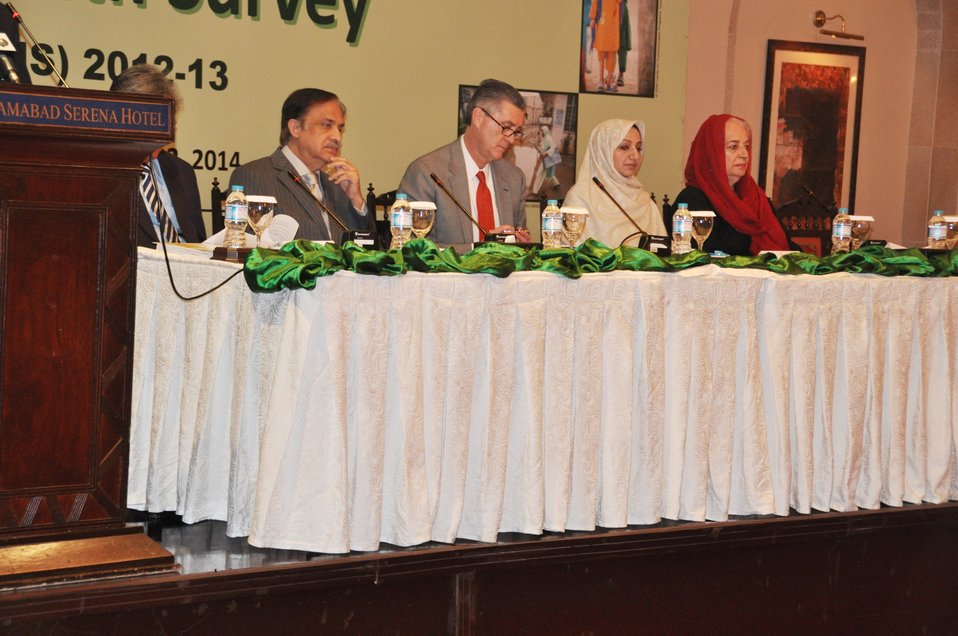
PDHS Launch

The PDHS 2012-13 survey was jointly implemented by the Government of Pakistan’s Ministry of National Health Services, Regulation and Coordination and the United States Government through the United States Agency for International Development (USAID).